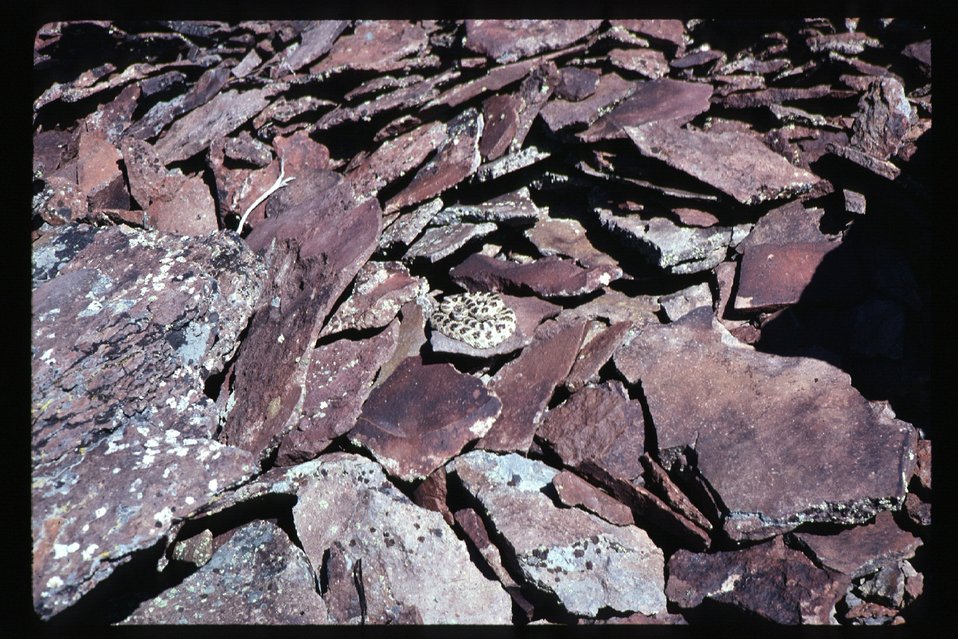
Snake warming up on rock Battle Creek Wildlife LSRD Lower Snake River District